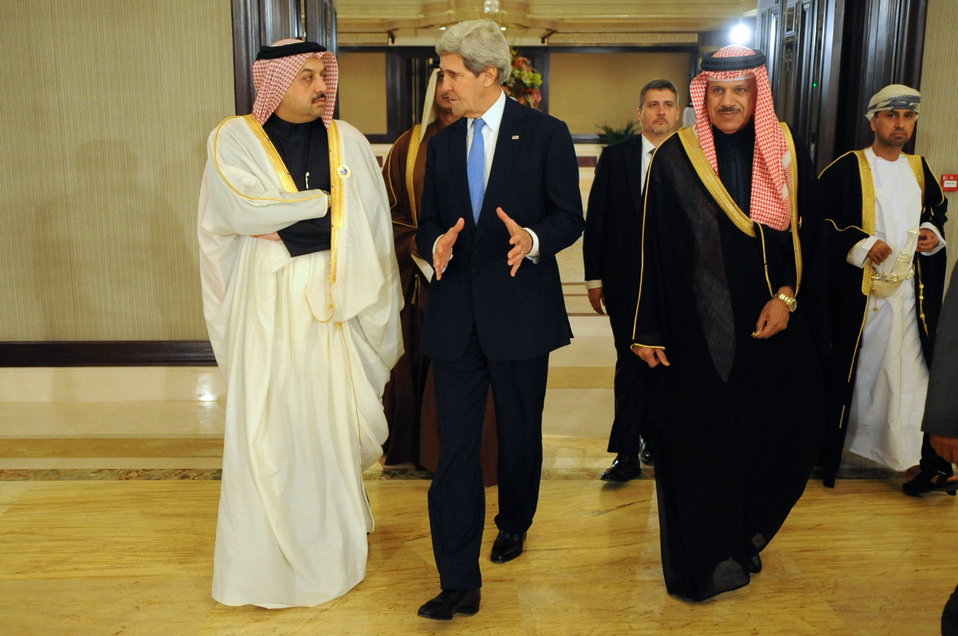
Secretary Kerry Speaks With Qatari Foreign Minister Before Syrian Donors' Conference

U.S. Secretary of State John Kerry speaks with Foreign Minister Khalid Bin Muhammad al-Atiyah of Qatar before the start of the Syrian Donors' Conference in Kuwait City, Kuwait, on January 15, 2014.